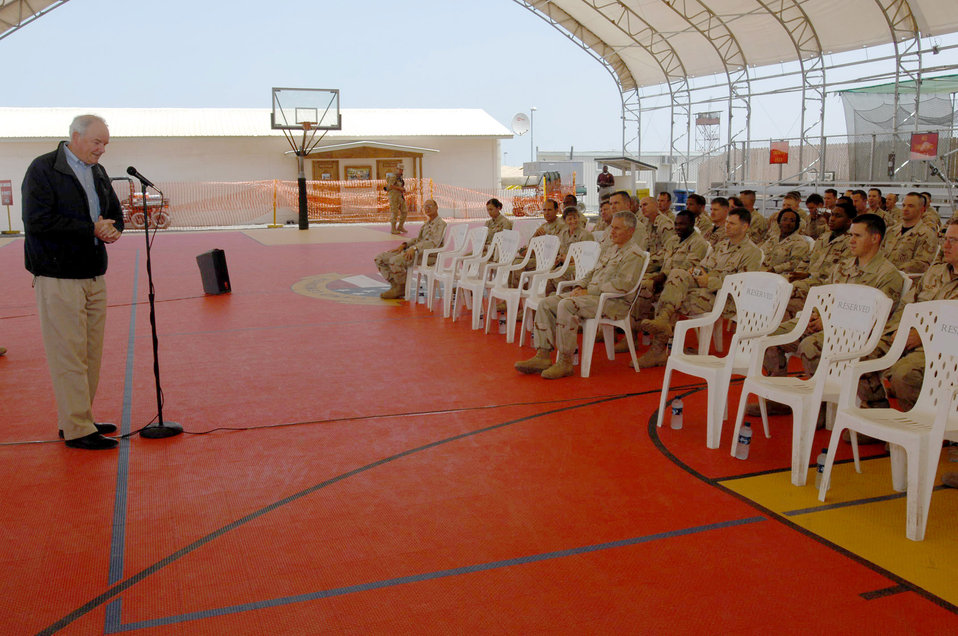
Secretary Wynne visits Airmen in Djibouti

Secretary of the Air Force Michael W. Wynne holds an Airmen's Call during his March 29 visit to Camp Lemonier in Djibouti. Airmen had an opportunity to ask Secretary Wynne questions about Air Force issues. The Air Force contingency on Camp Lemonier has almost 200 Airmen who support the Combined Joint Task Force-Horn of Africa mission.